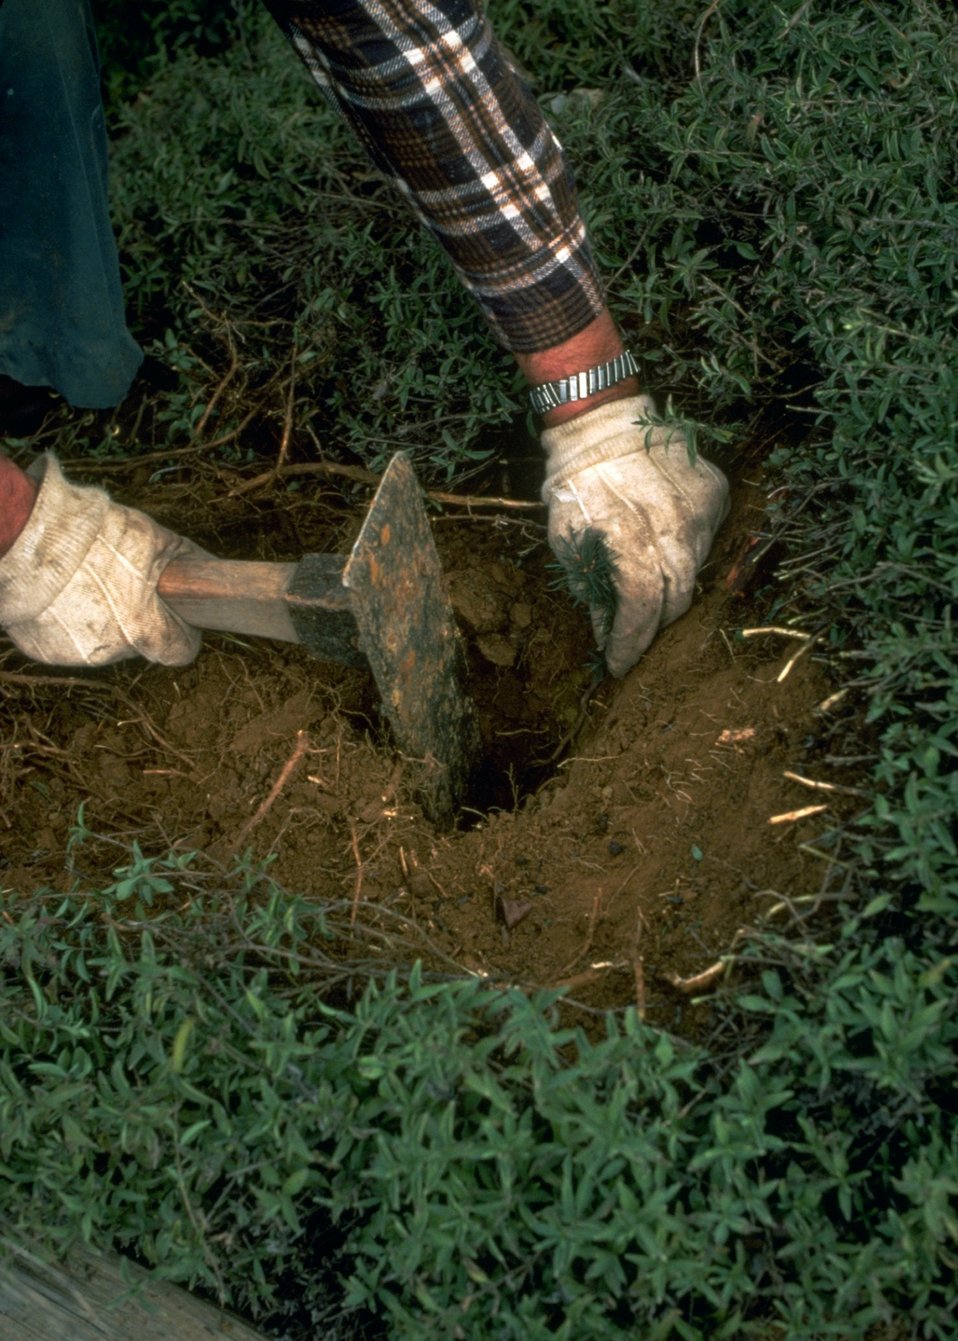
Forester using a hoedad for planting trees.